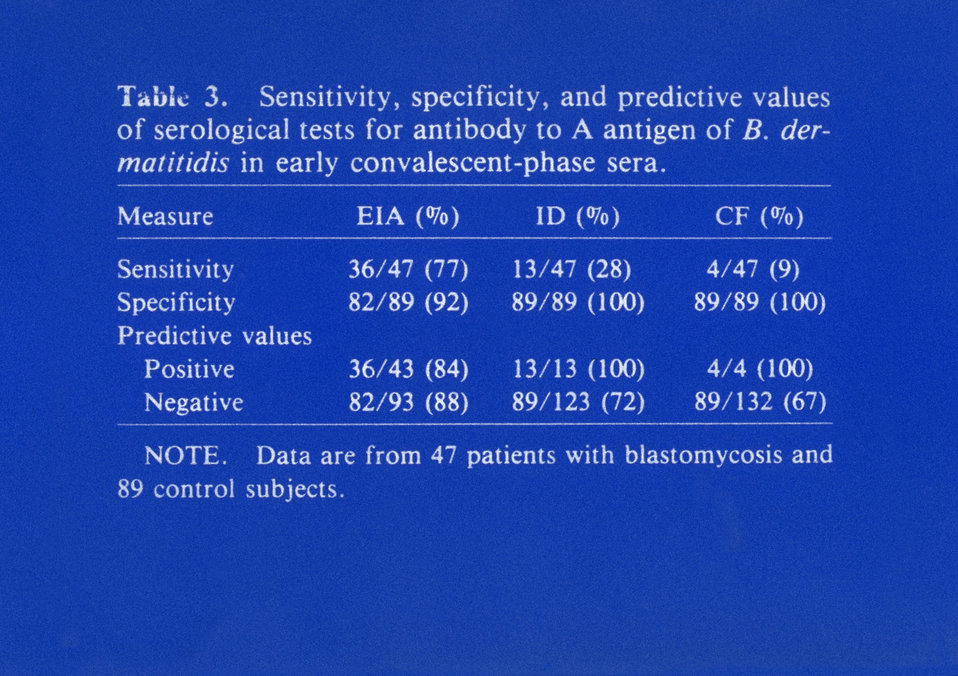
Serological tests for blastomycosis.